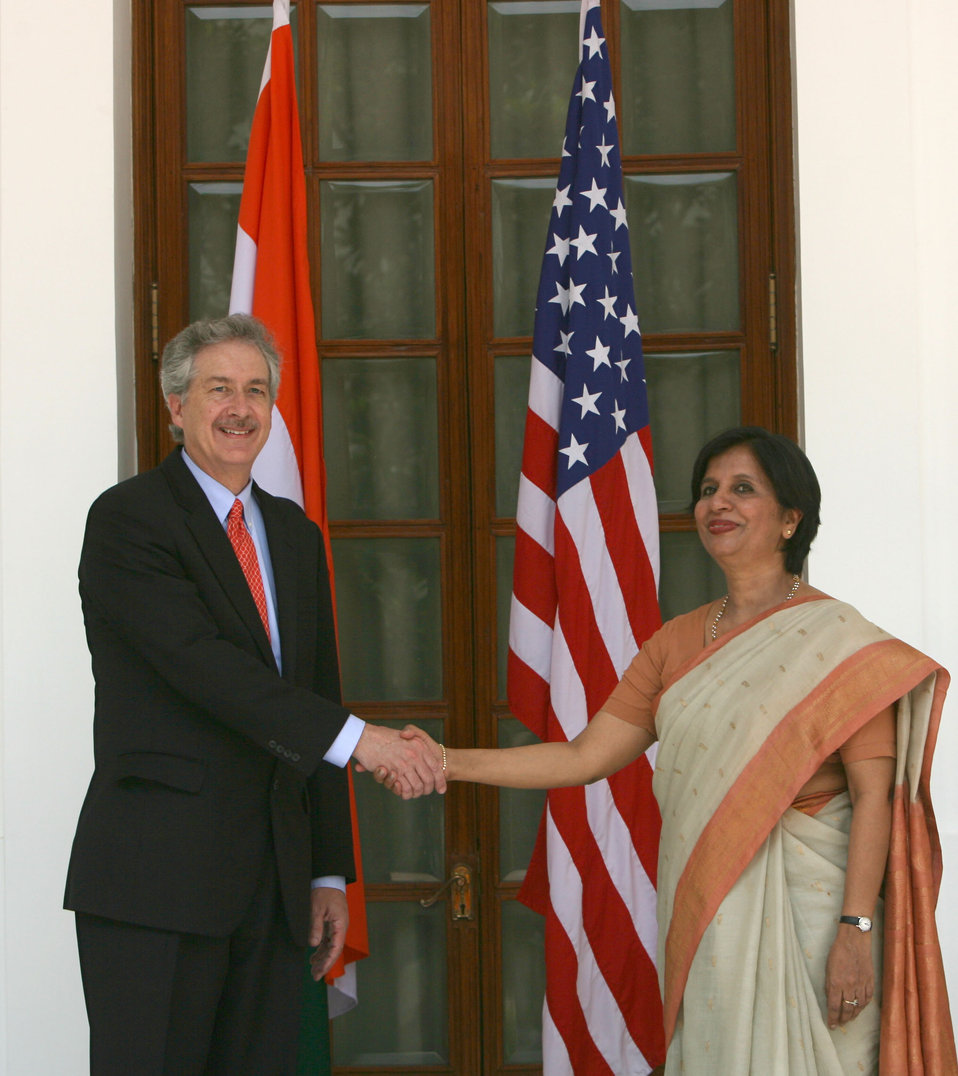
Under Secretary Burns Shakes Hands With Indian Foreign Secretary Rao

Under Secretary for Political Affairs William J. Burns shakes hands with Indian Foreign Secretary Nirupama Rao at the Hyderabad House in New Delhi, India, on May 24, 2010.